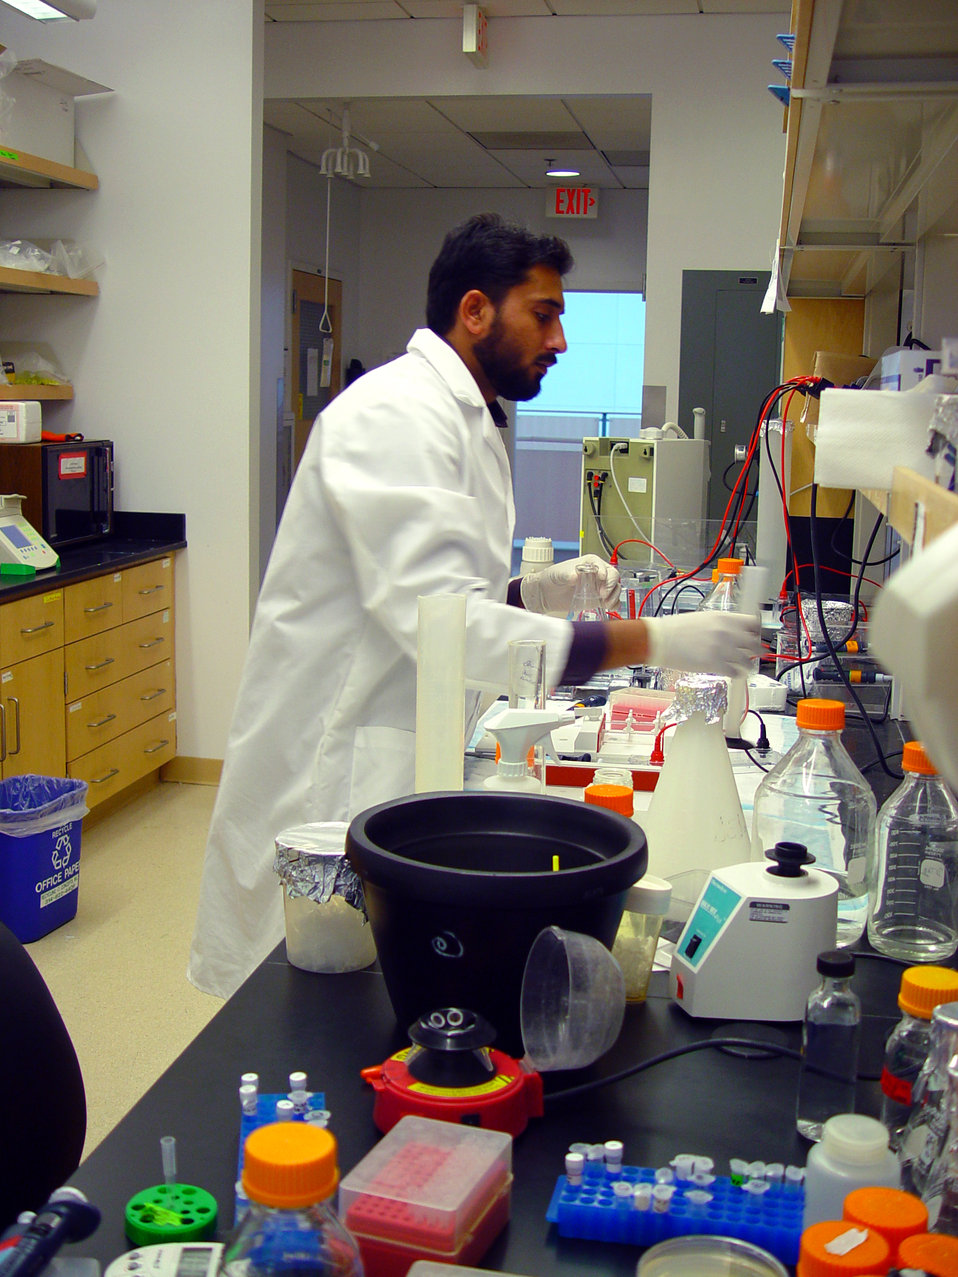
EDU Science and Technology